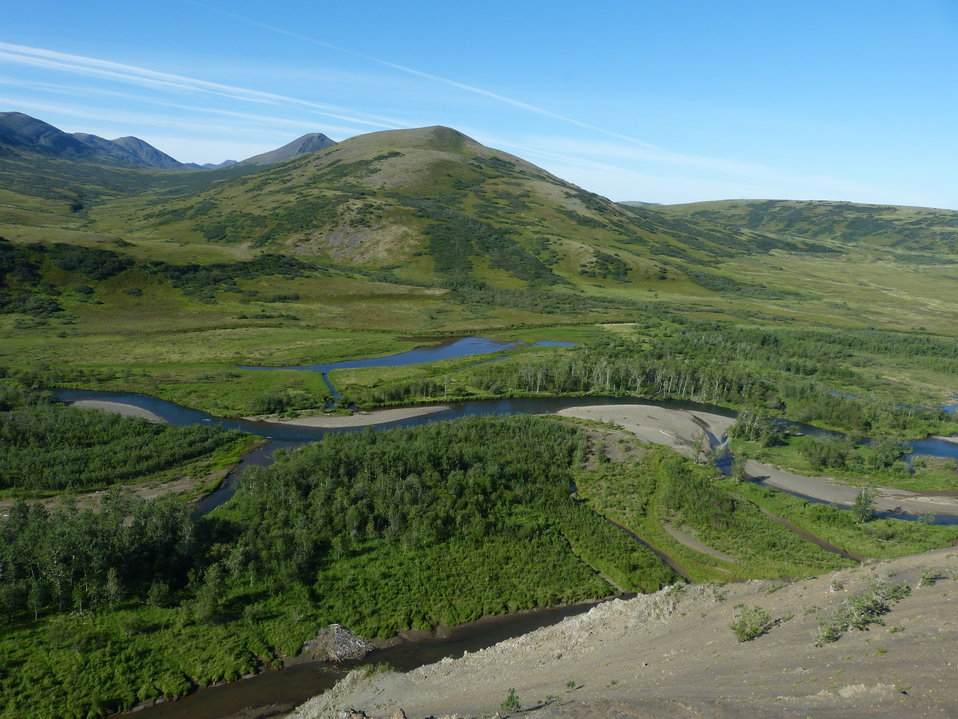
Eek River, Yukon Delta National Wildlife Refuge

Photo by: Kristine Sowl,
USFWS, Yukon Delta NWR, July 11, 2013